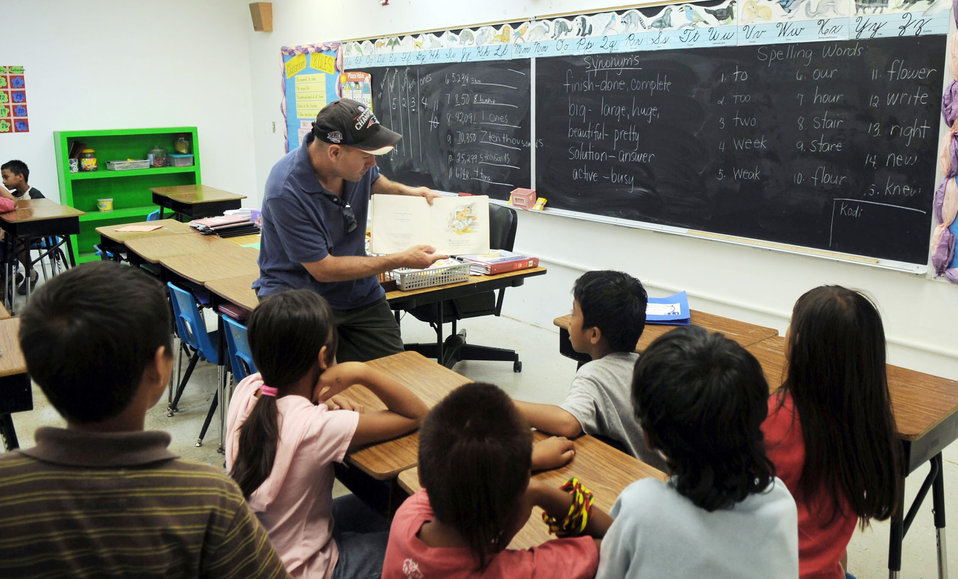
Airmen spend time with students during deployment

Senior Master Sgt. Peter Allan reads to third and fourth graders June 19 at Machananao Elementary School in Agana, Guam. The North Conway, N.H., native is deployed to Andersen Air Force Base, Guam, from Elmendorf AFB, Alaska, to support U.S. Pacific Command's continuous bomber presence in the Asia-Pacific Region. Sergeant Allan is a superintendent with the 525th Expeditionary Aircraft Maintenance Unit.